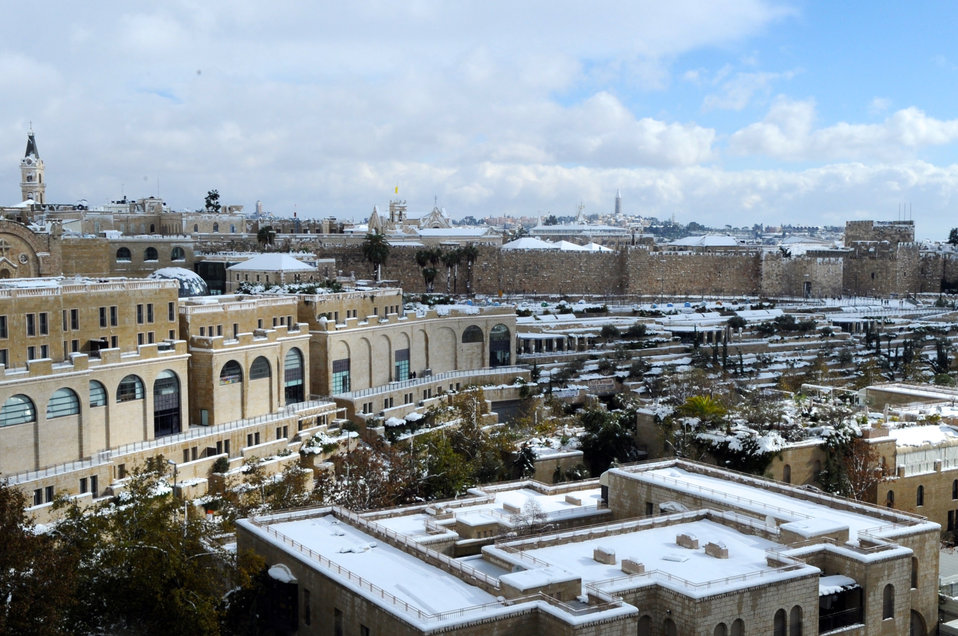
Rare Snow Blankets Jerusalem's Old City

A rare accumulating snowfall blankets Jerusalem's Old City, as seen from the hotel used by U.S. Secretary of State John Kerry during his visit to Israel and the West Bank on December 13, 2013.